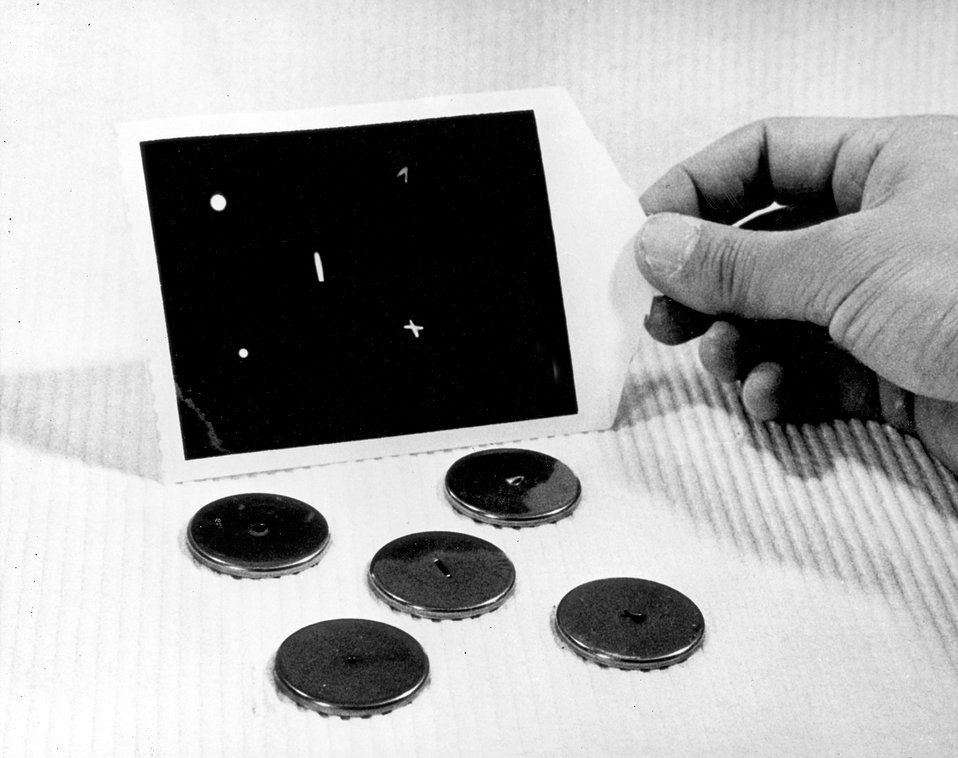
Money marked invisibly by atomic methods, may prove to be a further legal nemesis to track down criminals.
c.1969